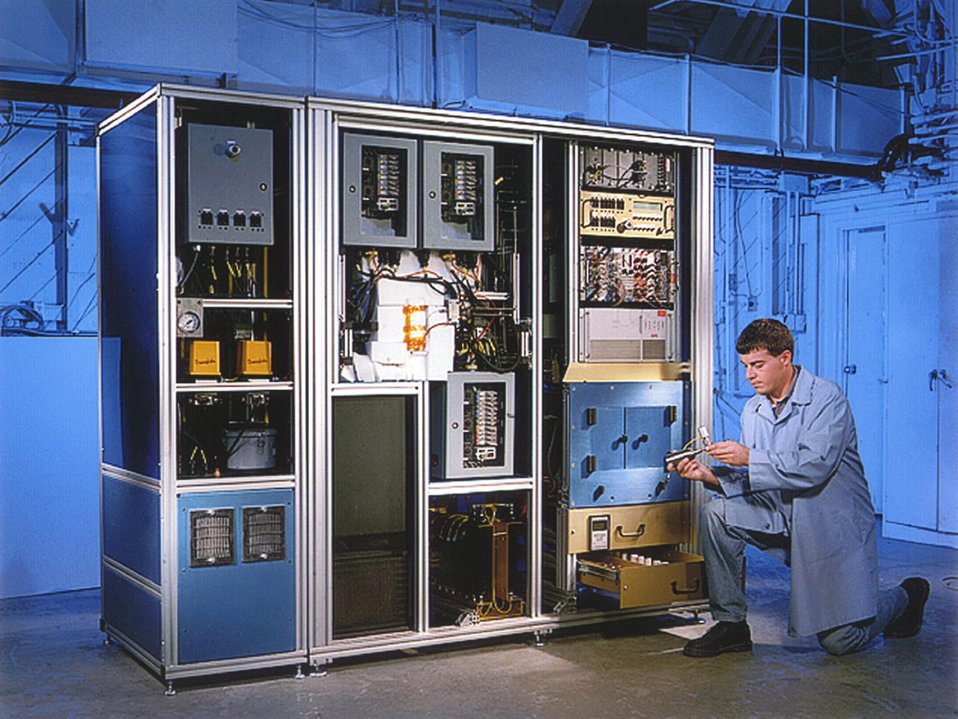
TECHNICIAN REMOVING AN ARCHIVAL BOTTLE FROM THE AUTOMATED RADIOXENON SAMPLER-ANALYZER.

A PNNL TECHNICIAN IS REMOVING ONE OF THE ARCHIVAL BOTTLES USED TO STORE XENON SAMPLES FROM THE AUTOMATED RADIOXENON SAMPLER-ANALYZER, A TECHNOLOGY DEVELOPED BY PNNL TO DETECT XENON FROM UNDERGROUND NUCLEAR WEAPONS TESTING. ARSA COLLECTS AIR SAMPLES, PROCESSES THEM TO TRAP THE RADIOACTIVE XENON ON COLD CHARCOAL. THE SYSTEM THEN PURIFIES THE RADIOACTIVE XENON, AND TRANSFERS IT TO A NUCLEAR COUNTING SYSTEM.